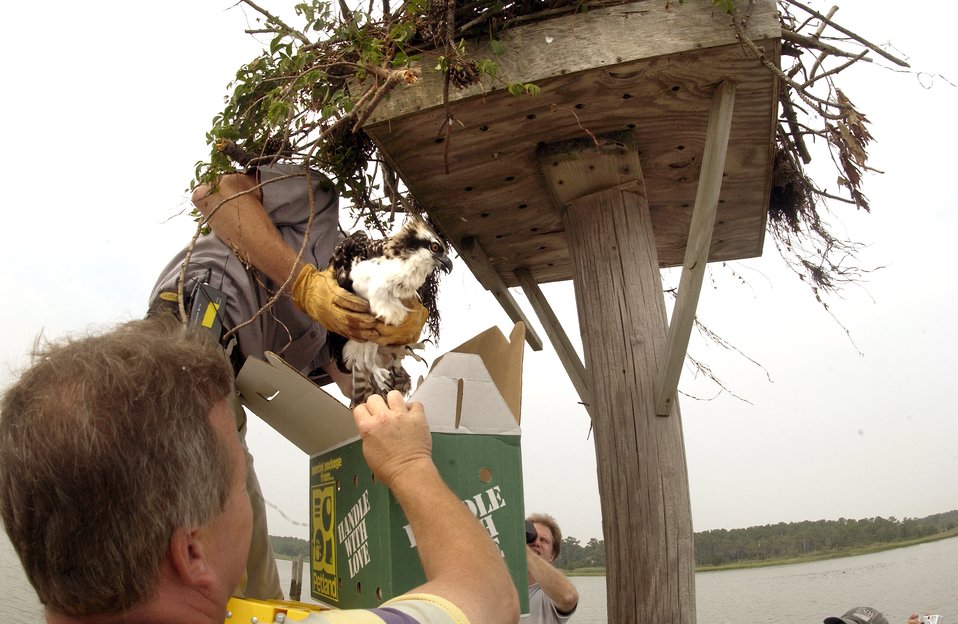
Ospreys, Eagles share airspace at Langley

LANGLEY AIR FORCE BASE, Va. -- Tom Olexa (top) and Mitchell Burcham secure an osprey hatchling nesting on top of a birds nest in waters surrounding the base. Eleven osprey were relocated from Langley to a conservation facility in Cumberland, Ohio, to control the population and minimize the risk of potential bird strikes. Mr. Olexa is a wildlife biologist with the U.S. Department of Agriculture Wildlife Services Division, and Mr. Burcham is an anemology specialist with the 1st Civil Engineer Squadron.